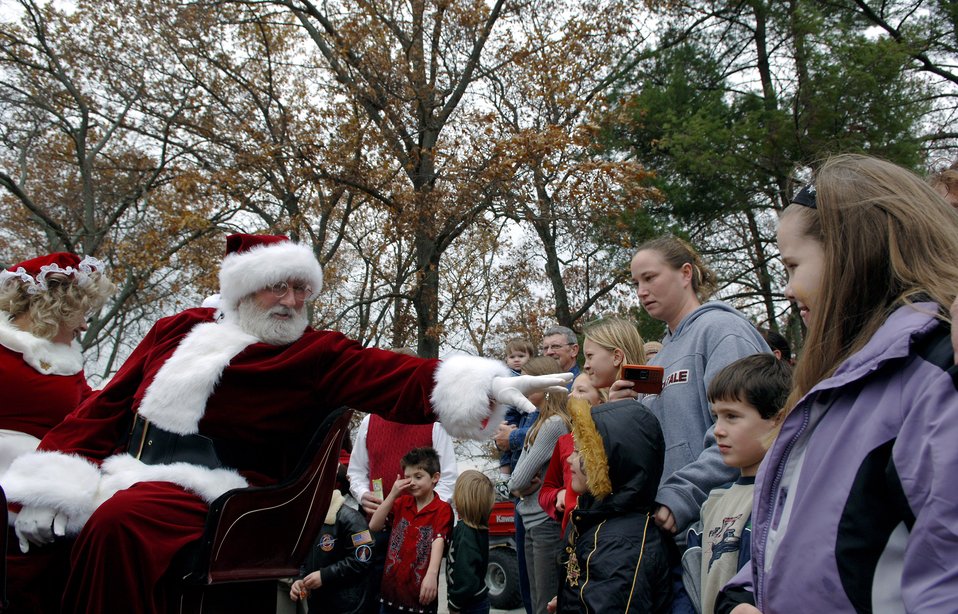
Santa brings holiday cheer to Arnold party

Santa greets kids attending the annual holiday Christmas party Dec. 2 at Arnold Air Force Base, Tenn.